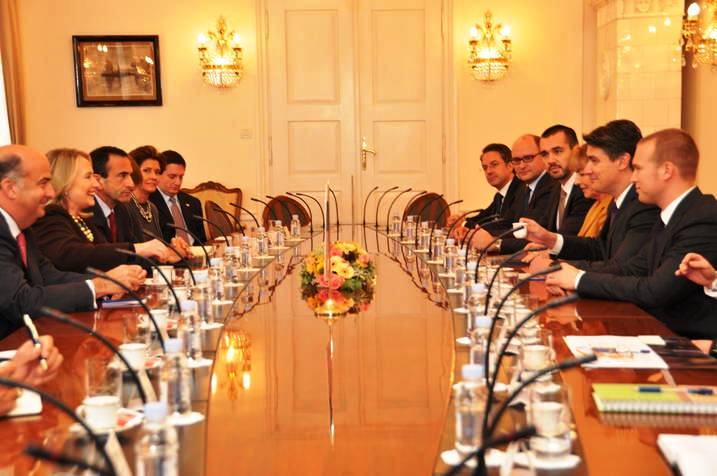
Secretary Clinton Meets With Croatian President Milanovic

U.S. Secretary of State Hillary Rodham Clinton meets with Croatian Prime Minister Zoran Milanovic in Zagreb, Croatia, October 31, 2012.